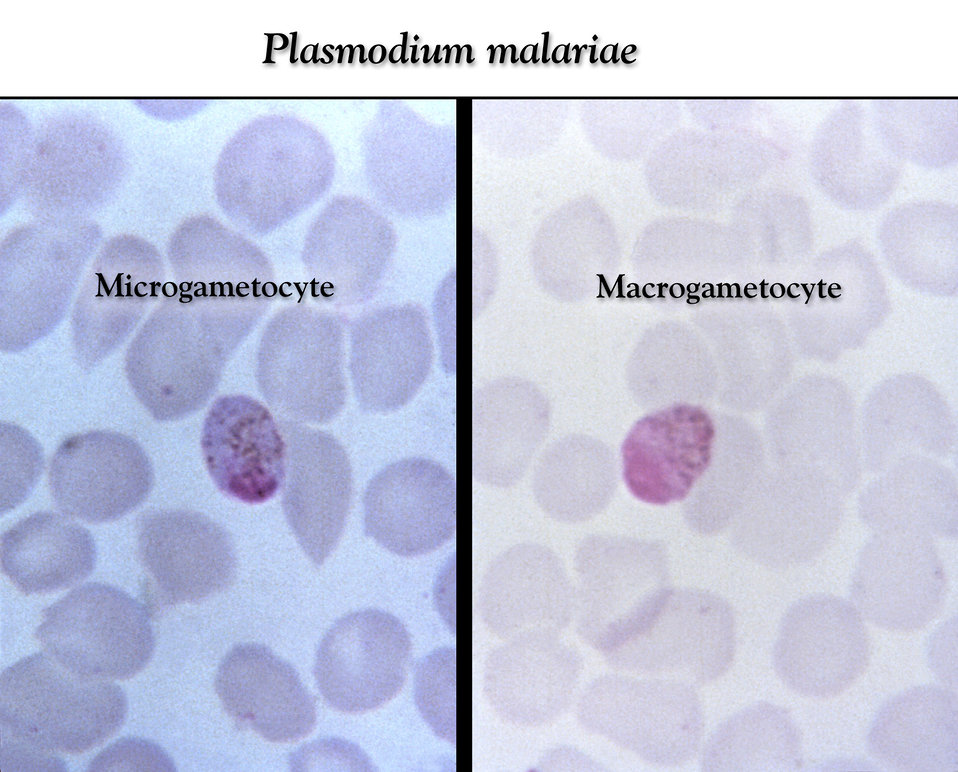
This thin film Giemsa stained micrograph depicts a Plasmodium malariae micro- (Lt) and macrogametocyte (Rt).